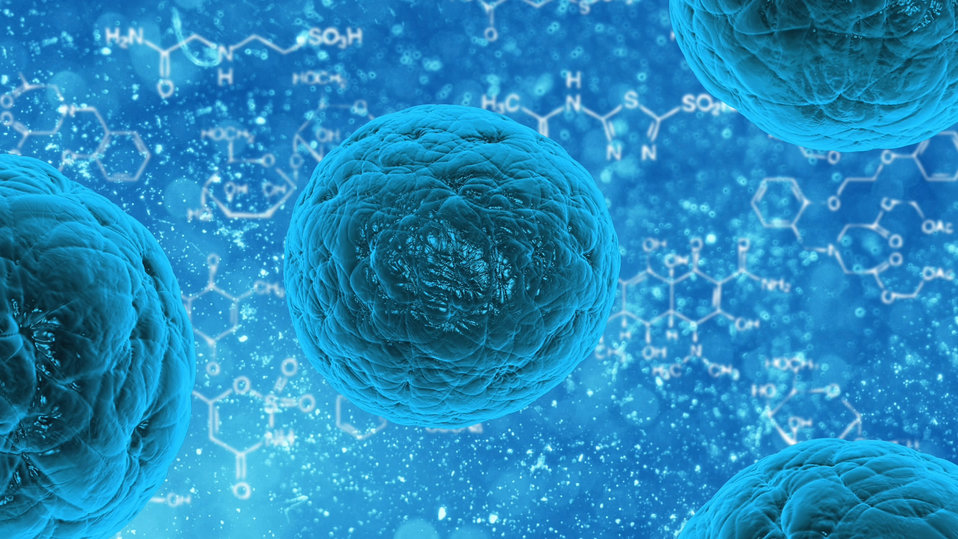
Cell

Cells under microscope.